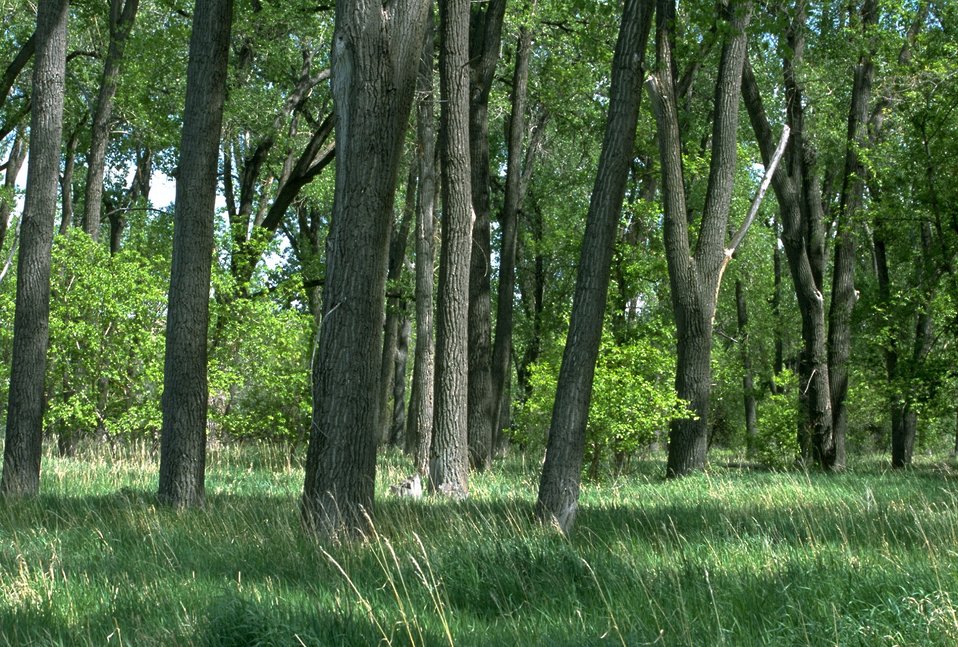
Grove of cottonwood trees along the Clark's Fork of the Yellowstone River in the Sundance Lodge Recreation Area